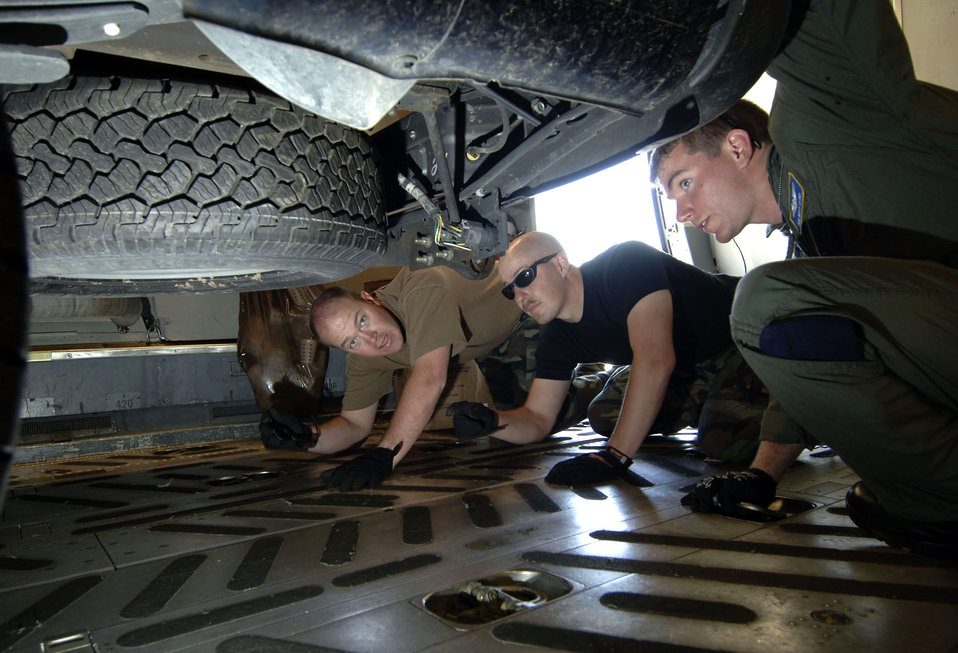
Charleston Airmen train Davis-Monthan loadmasters

Airman 1st Class Matthew Efird (right) trains augmentee loadmasters on how to properly secure a vehicle after it has been loaded on a C-17 Globemaster III April 28 at Davis-Monthan Air Force Base, Ariz. Airman Efird is a loadmaster from Charleston AFB, S.C.